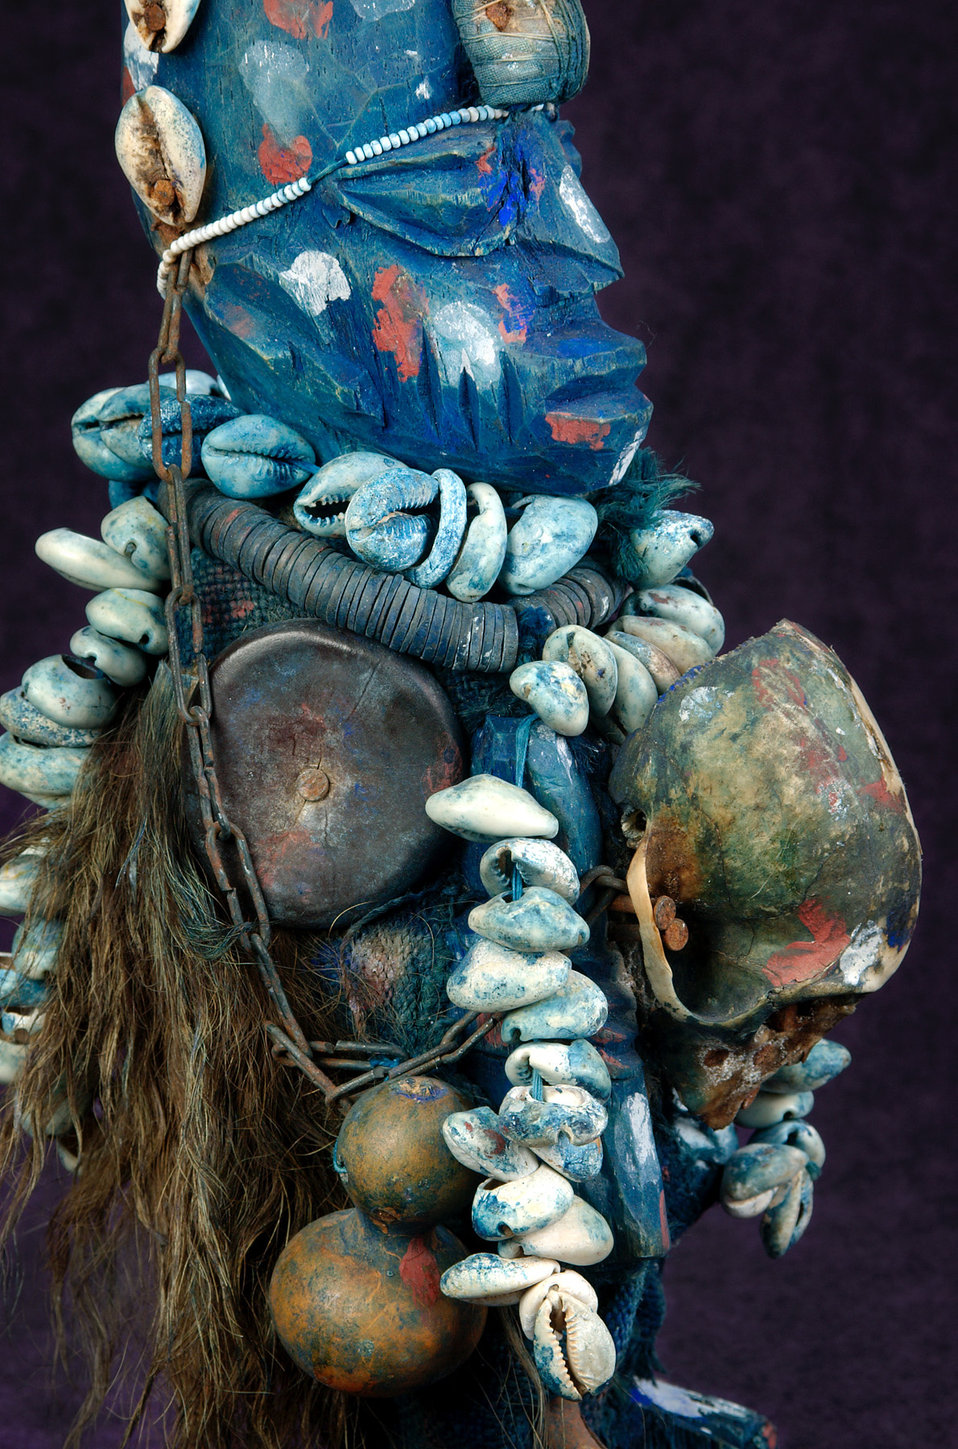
This is a statue of Shapona, the West African God of Smallpox. It is part of the CDC's Global Health Odyssey (GHO) collection of artifacts. A uniquely carved wooden figure, it is adorned with layers of meaningful objects such as monkey skulls, cowrie shells, and nails. Donated in 1995 by Ilze and Rafe Henderson, it was created by a traditional healer who made approximately 50 Shaponas as commemorative objects for the CDC, WHO, and other public health experts attending a 1969 conference on smallpox eradication